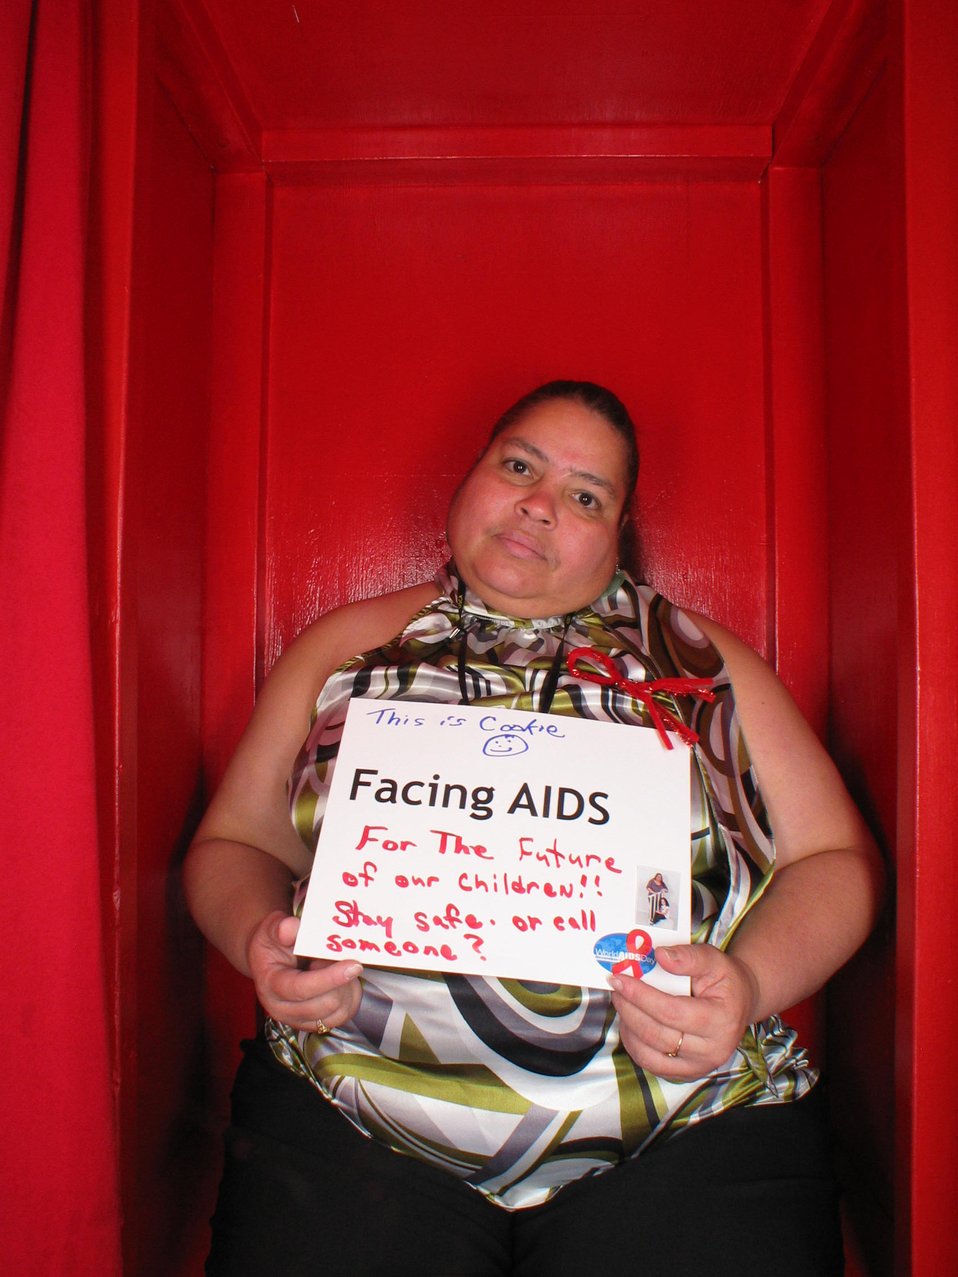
Facing AIDS for the future of our children!!! Stay safe.